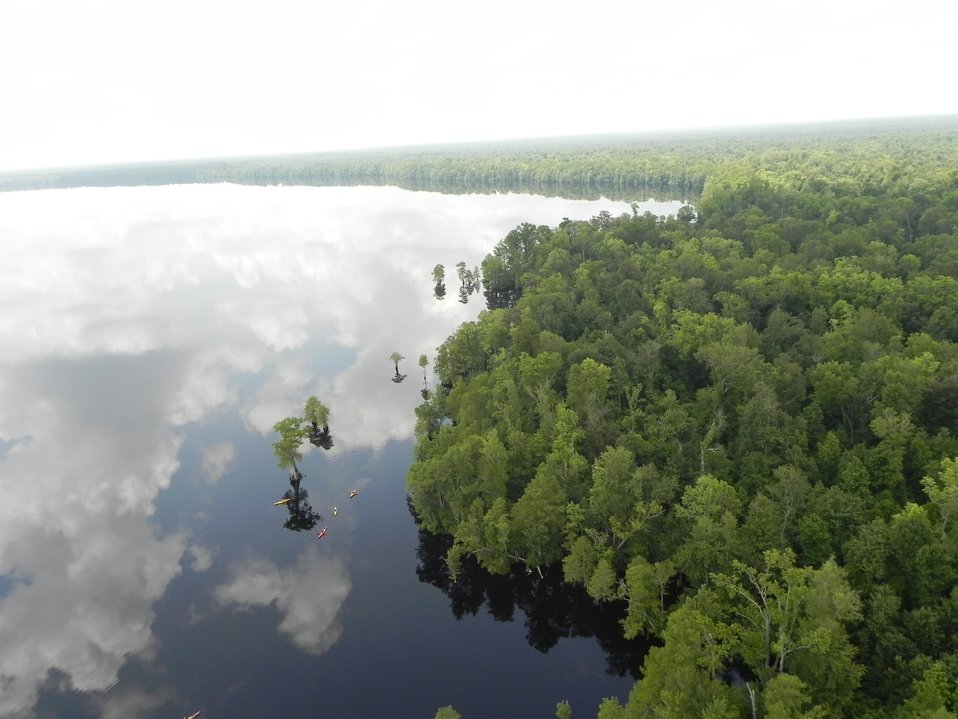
Aerial view

Great Dismal Swamp National Wildlife Refuge.